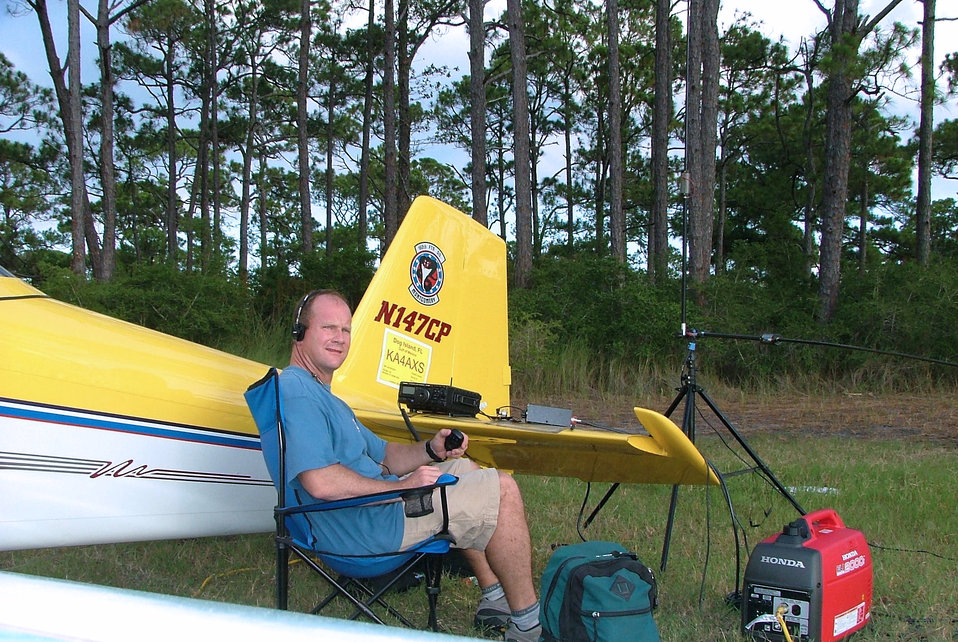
Airman flies to Dog Island to test radio communication

DOG ISLAND, Fla. -- Lt. Col. Edward Linch attempts to contact another amateur radio operator during Field Day 2005. The nationwide event is held by the American Radio Relay League to link amateur stations with federal, state and local disaster relief agencies. Colonel Linch flew his private plane here -- an island with no permanent residents or formal airfield -- establishing a link to 36 other operators during extremely poor atmospheric conditions. He is the wing plans chief of the 505th Command and Control Wing at nearby Hurlburt Field.